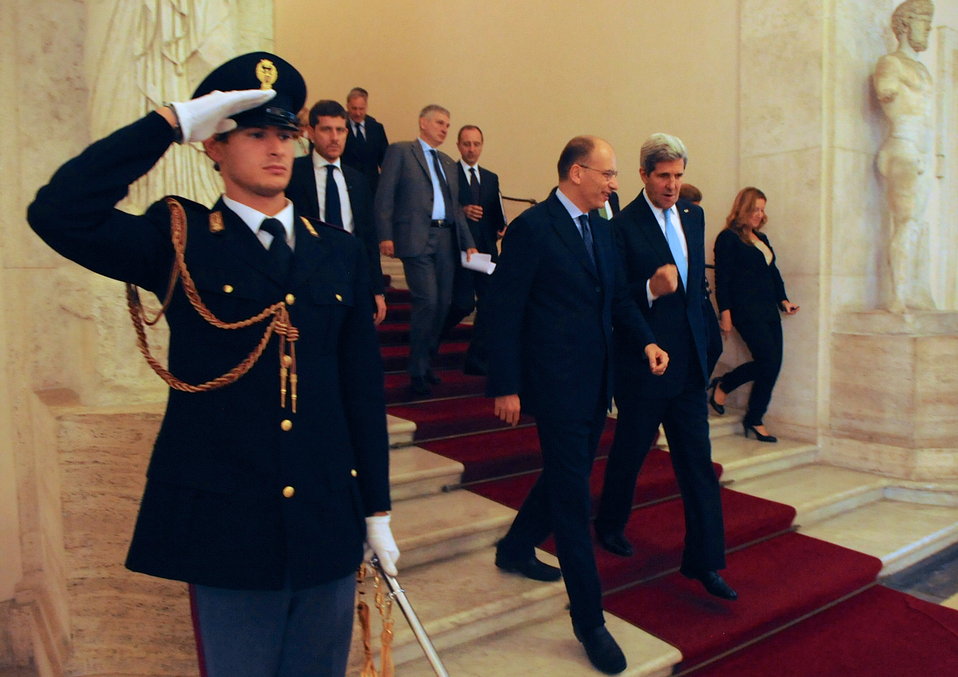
Secretary Kerry and Italian Prime Minister Letta Leave a Meeting

Italian Prime Minister Enrico Letta escorts U.S. Secretary of State John Kerry past an honor guard after a meeting in Rome, Italy on October 23, 2013.